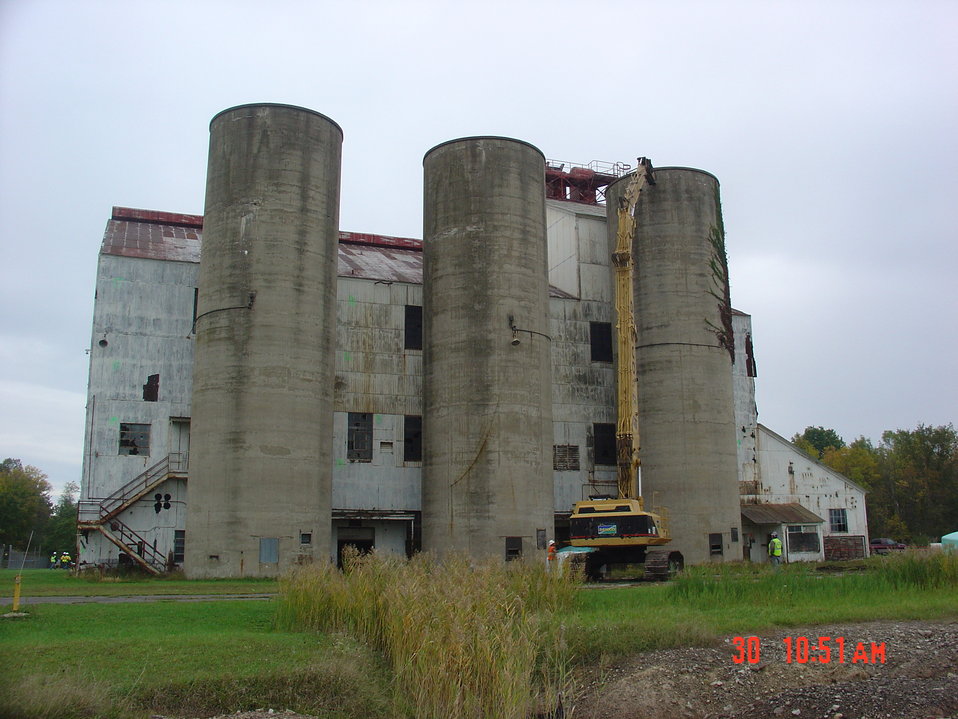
BLDG 401 SILO DEMO LANDSCAPE VIEW

Activities from the Niagara Falls Storage Site, which is associated with the former Lake Ontario Ordnance Works. Formerly Utilized Sites Remedial Action Program (FUSRAP), a program initiated in 1974 to identify, investigate and clean up or control sites that were part of the Nation's early atomic energy and weapons program. Activities at the sites that are eligible for FUSRAP were conducted by Manhattan Engineer District (MED) or the Atomic Energy Commission (AEC), both predecessors of the Department of Energy (DOE). The U.S. Army Corps of Engineers was assigned management of FUSRAP by Congress in 1997.